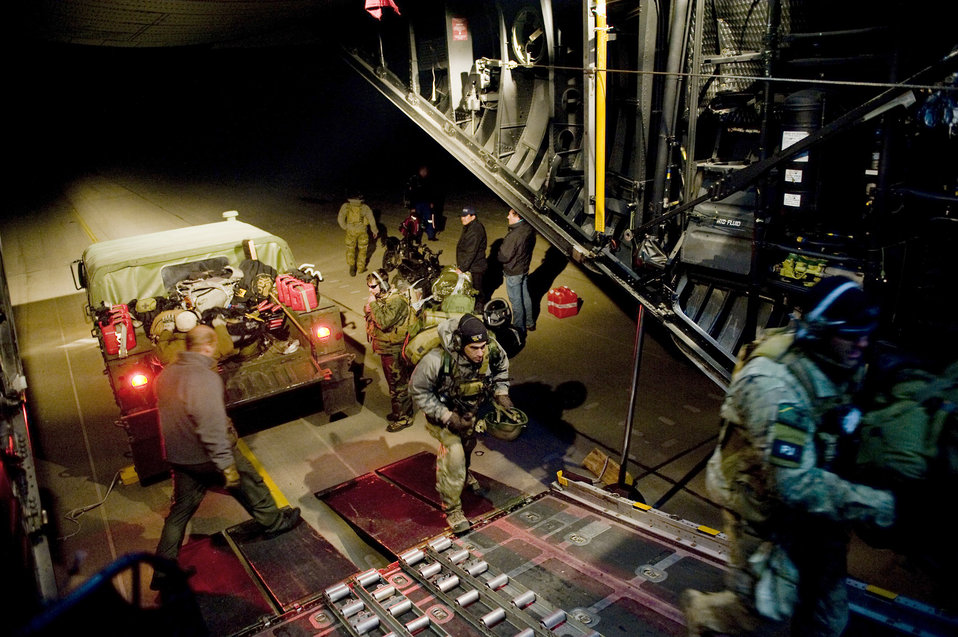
Delivering supplies

Members of the 353rd Special Operations Group off-load and upload new gear March 16, 2011, at Sendai Airport, Japan. The 353rd Special Operations Group is establishing a usable runway at Sendai Airport to help with Japan's earthquake and tsunami relief.